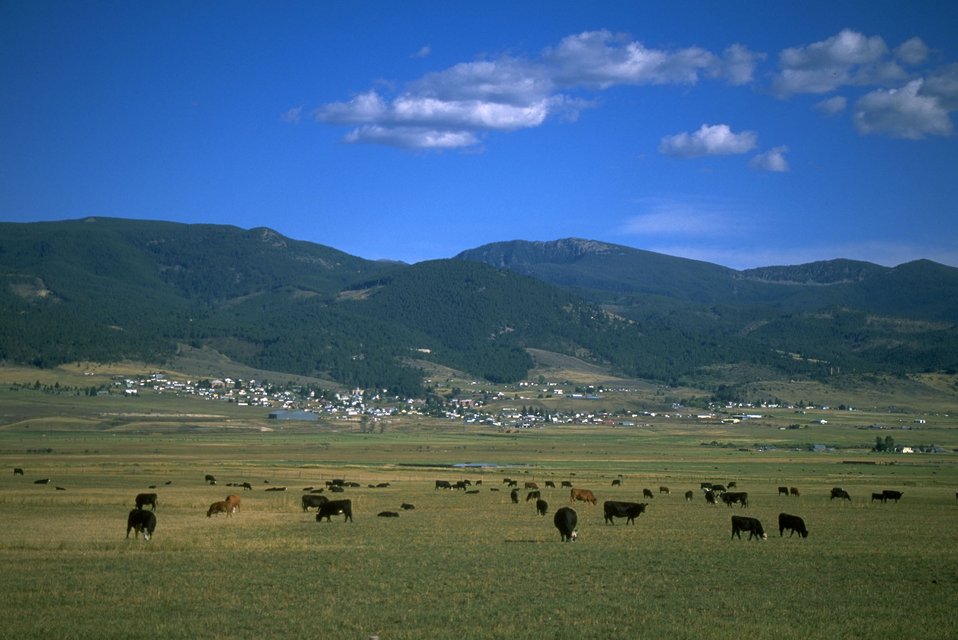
Philipsburg, Montana